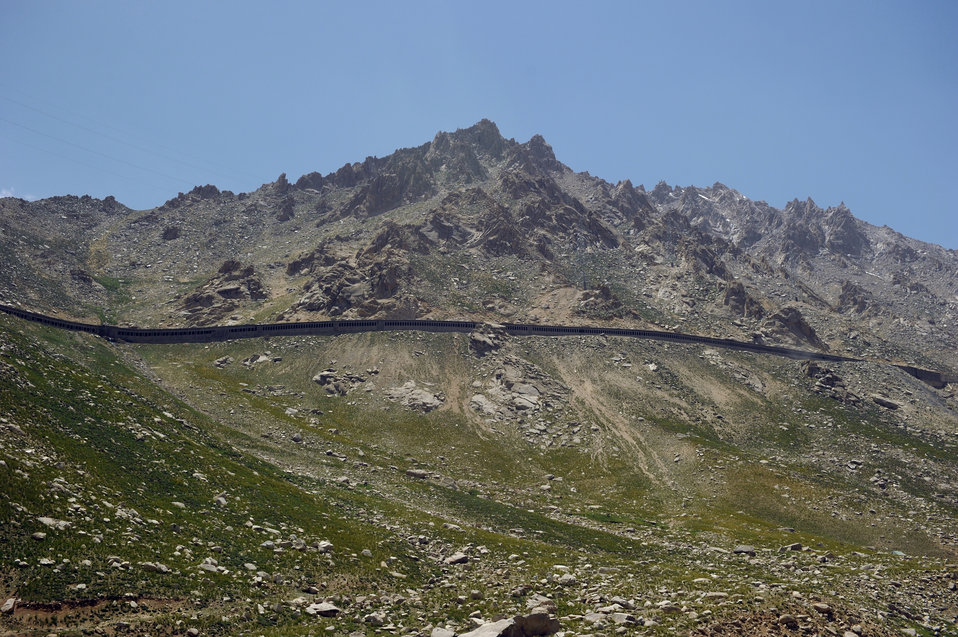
One of the galleries of the Salang Tunnel on the border of Parwan and Baghlan Provinces, Afghanistan, on Wednesday, June 15, 2011. (S.K.Vemmer/Department of State)